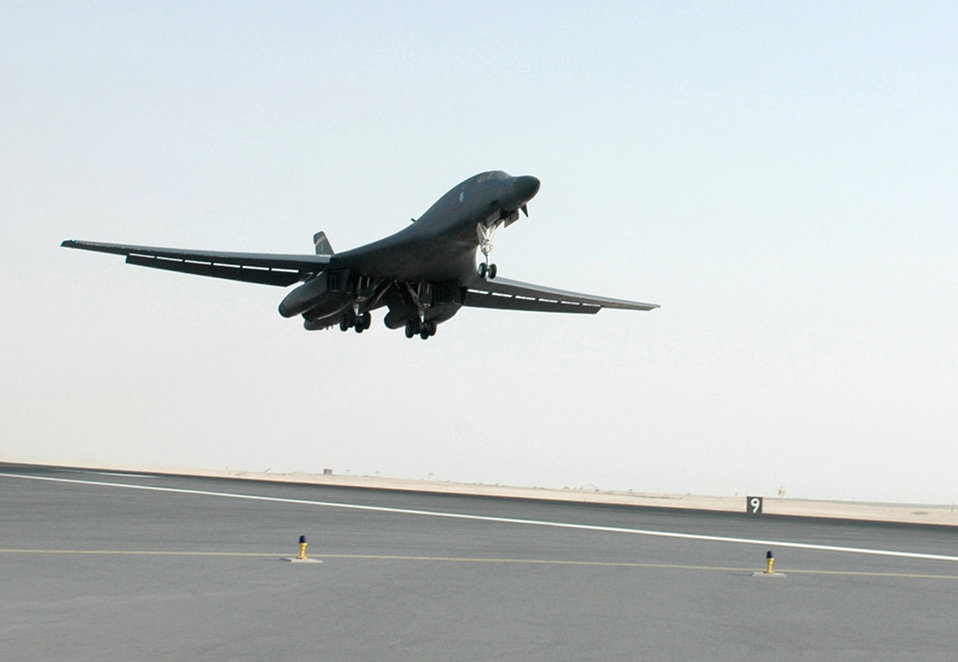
Airpower Summary for May 17, 2007

A B-1B Lancer takes off from a deployed air base in Southwest Asia May 15. The bombers provide close air support and shows of force in support of Operations Enduring Freedom and Iraqi Freedom